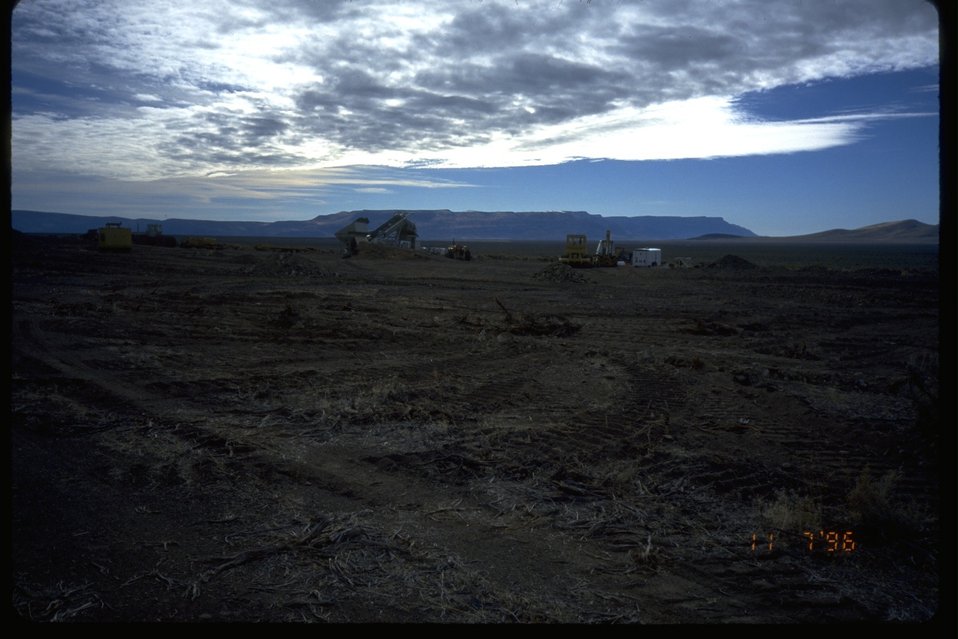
The first day of Perlite Mining.